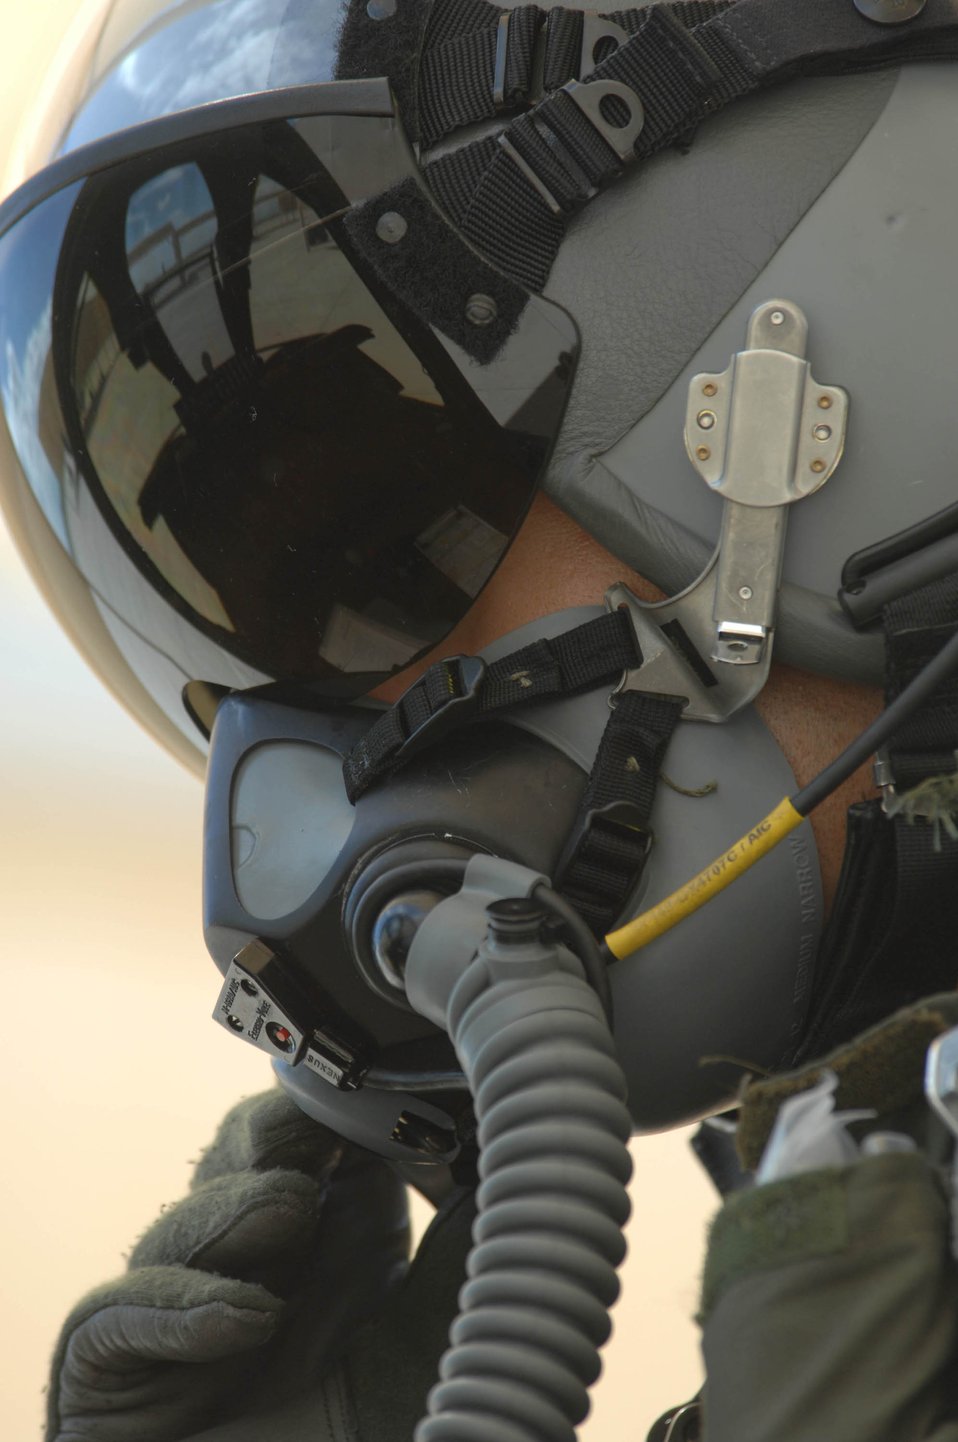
First class qualification

Second Lieutenant Robert Arena sits in his A-10 Thunderbolt II after completing the first A-10C pilot initial qualification course Aug. 2 at Davis-Monthan Air Force Base, Ariz. During the seven-month-long course, the training focused on the new A-10C platform which replaced the A-10A. The pilots also learned the basics of being attack pilot wingmen, which included flying in formation to provide mutual support, communicate with radios and kill the assigned target on the first attempt. Lieutenant Arena is an A-10 pilot with the 357th Fighter Squadron.